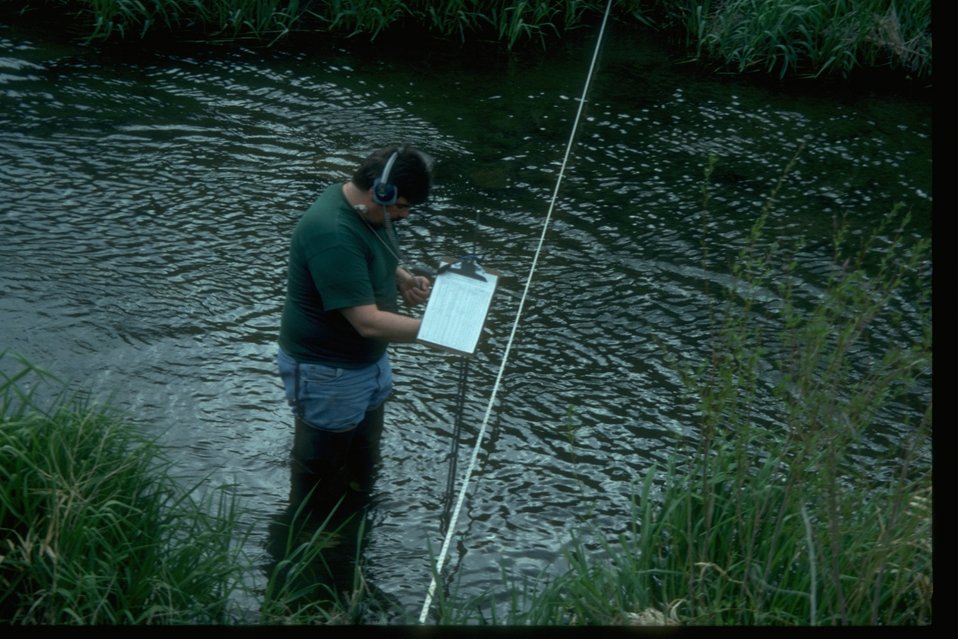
Hydrologist measures stream flow in Douglas Creek.